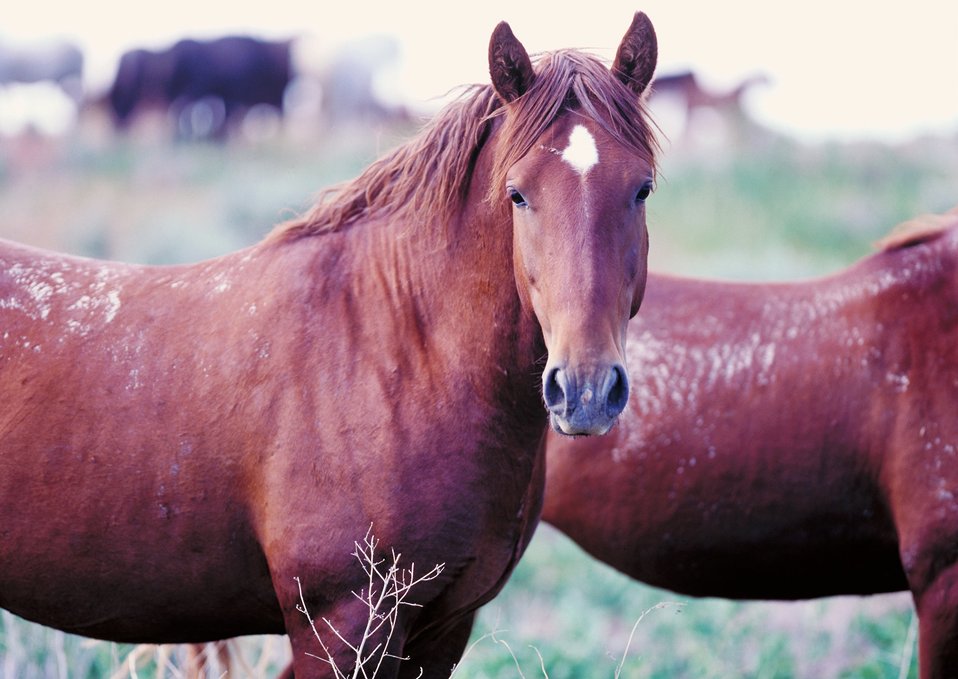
Onaqui Herd near Dugway, Utah.